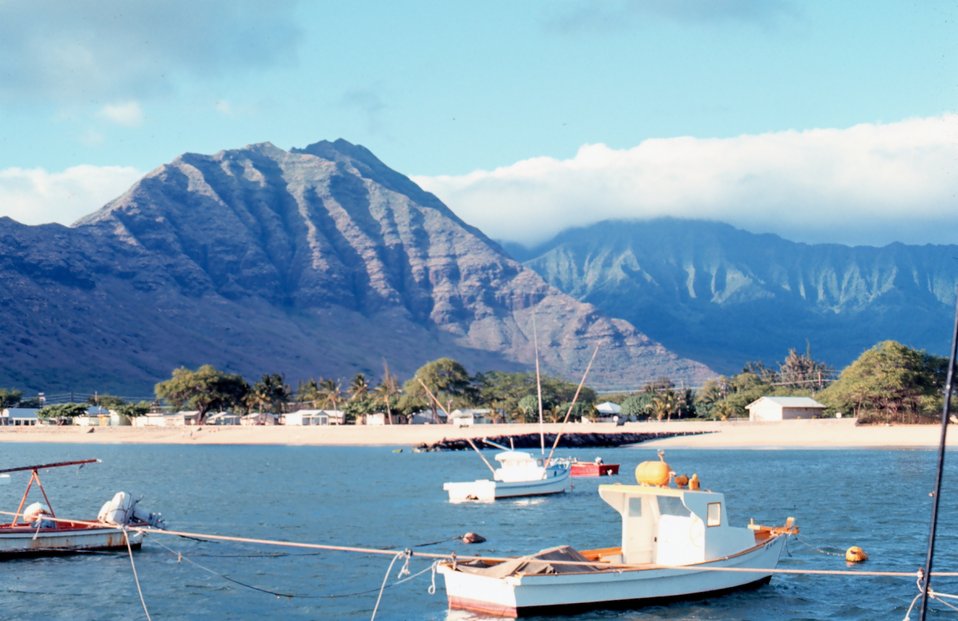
Waianae coast -southwest Oahu